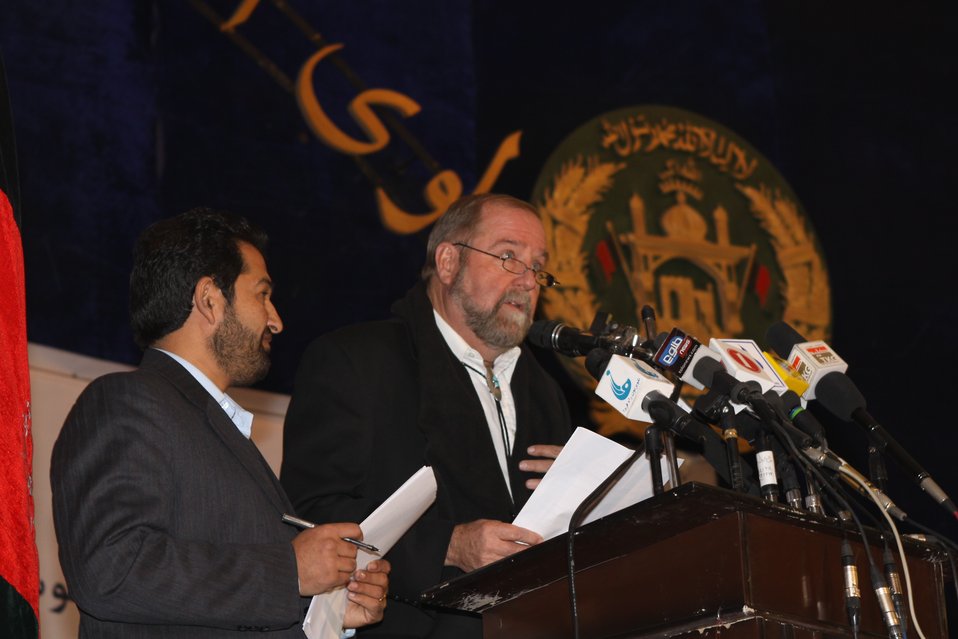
Community Health Workers Celebrated

Kabul, Afghanistan | December 5, 2010 — In support of the United Nations designated International Volunteer Day for Economic and Social Development, Afghanistan’s Ministry of Public Health celebrated its annual Community Health Worker Day today. Acting Minister of Public Health Dr. Suraya Dalil, USAID Senior Deputy Mission Director Robert Hellyer, other government officials, and international donors joined in recognizing the critical contribution of community health workers in Afghanistan and encouraging them to continue their voluntary support to their communities.
The event praised the contributions of the more than 22,000 volunteers throughout the country who deliver community level health-education, counseling, and services out of village health posts located in private homes. The Ministry of Public Health envisioned that community-based healthcare programs will actively encourage communities and families to adopt healthy lifestyles and behaviors, and provide families access to high quality and socially acceptable preventative medicine and life-saving services.
“We have 22,000 community health workers in Afghanistan that are able to implement the basic and standard medicines. They all have been trained through a job description,” said Minister Dalil. Addressing the health workers, she added, “I am proud and feel powerful that I have people like you.”
USAID-funded health projects collaborate closely with the Ministry of Public Health to improve the health and nutritional status of Afghans, provide quality primary healthcare, and promote healthy behaviors at the community and household-levels. USAID supported the training of more than 9,000 of the volunteer community health workers currently working in Afghanistan.
“On behalf of the American people, I congratulate the Community Health Workers for their diligence to gain the skills and knowledge necessary to serve their communities in this important role,” said USAID Senior Deputy Mission Director Hellyer. “USAID strongly supports community based health care and believes that quality community-based health services are essential to reaching Afghanistan’s Millennium Development Goals.”
To support the Basic Package of Health Services, USAID assisted in developing the community health worker training manual, helped train community health worker supervisors and master-trainers, facilitated in-service training, and produced and developed reporting tools, job aids, and education materials.